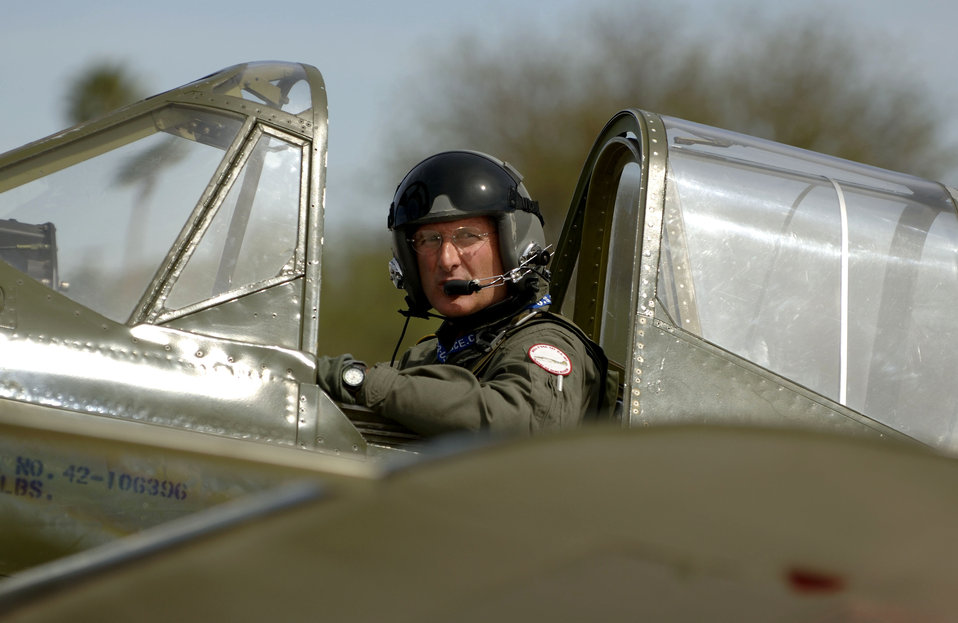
Heritage flight

Steve Hinton, a veteran Heritage pilot flying a P-40 Warhawk, prepares to taxi out during the second day of flying at the Air Combat Command Heritage Flight Conference at Davis-Monthan Air Force Base, Ariz., Saturday, March 4, 2006. This year's conference inaugurates nine years of flying old warbirds with modern day fighters to include the Air Force's newest stealth fighter.